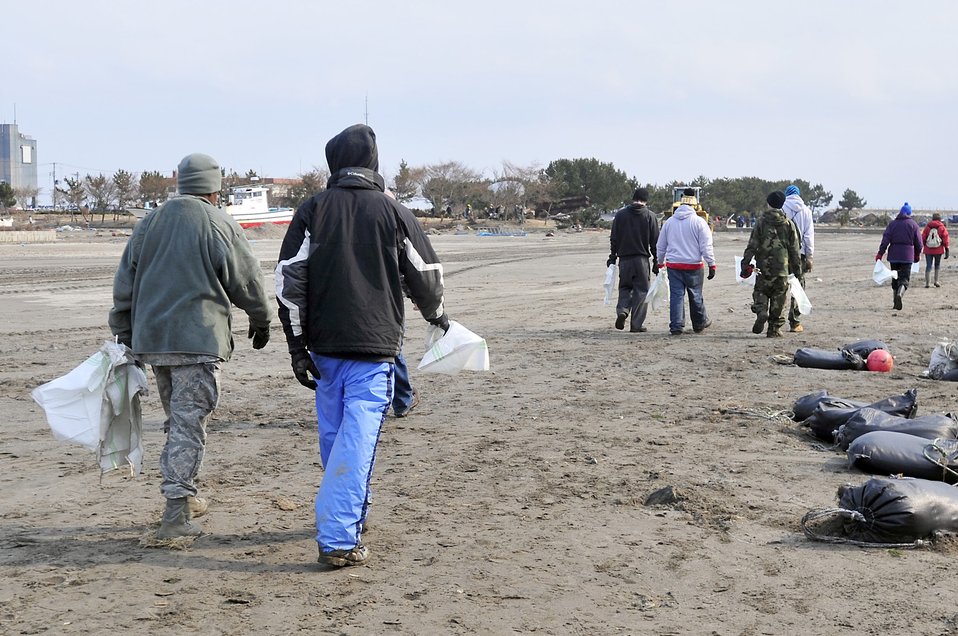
Misawa Air Base coordinates volunteer efforts

MISAWA AIR BASE, Japan -- Airmen and Sailors walk along the Misawa City fishing port Mar. 19. Volunteers have been helping with clean-up efforts since Mar. 14 after trash and debris washed up on the shoreline due to the effects of an earthquake Mar. 11.